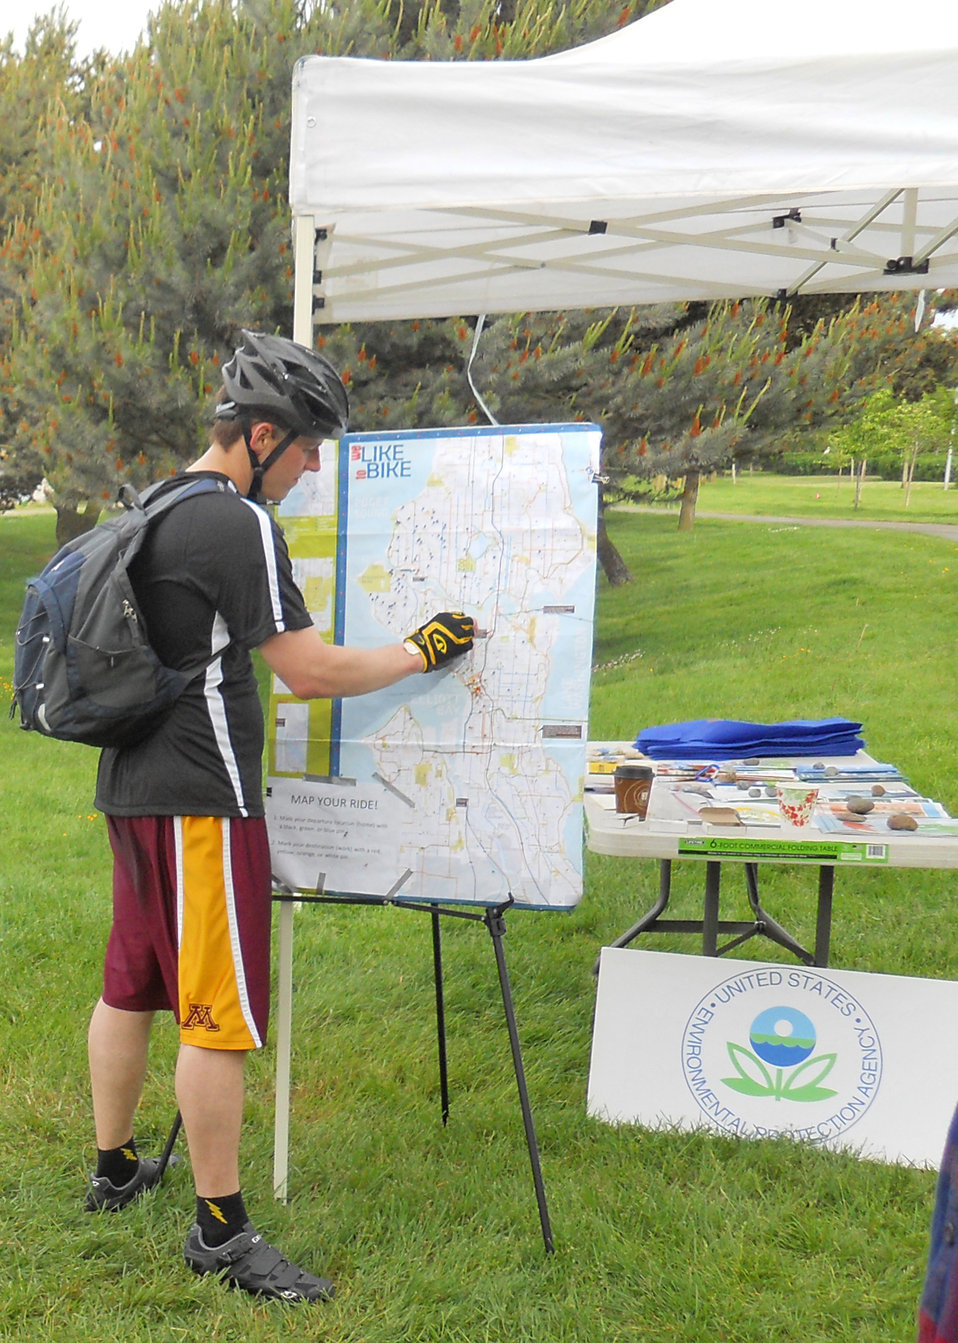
EPA Seattle Bike-To-Work Day 2014

A rider pins his trip on EPA’s commute map.